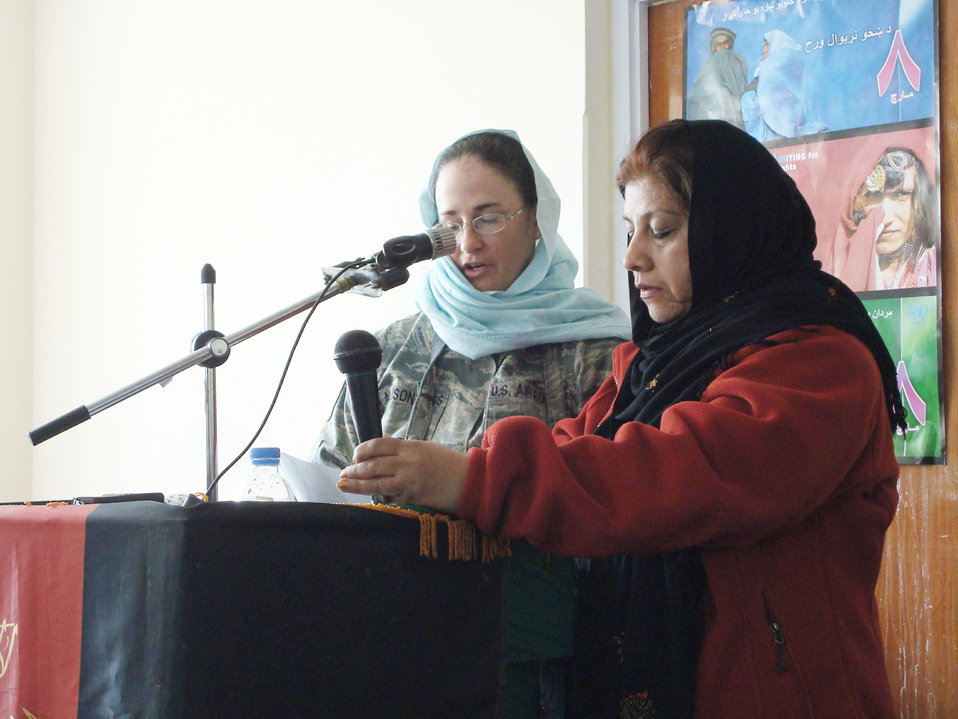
NCO speaks at International Women's Day event

Tech. Sgt. Dawn Allison-Hess, accompanied by interpreter Jamila, speaks with nearly 125 women and girls from Panjshir Valley who attended the March 8 International Women's Day celebration in Bazarak District in Afghanistan. The audience heard from the province's deputy governor and a former female Afghan judge. Sergeant Allison-Hess is the Panjshir Provincial Reconstruction Team intelligence officer and is deployed from Goodfellow Air Force Base, Texas.